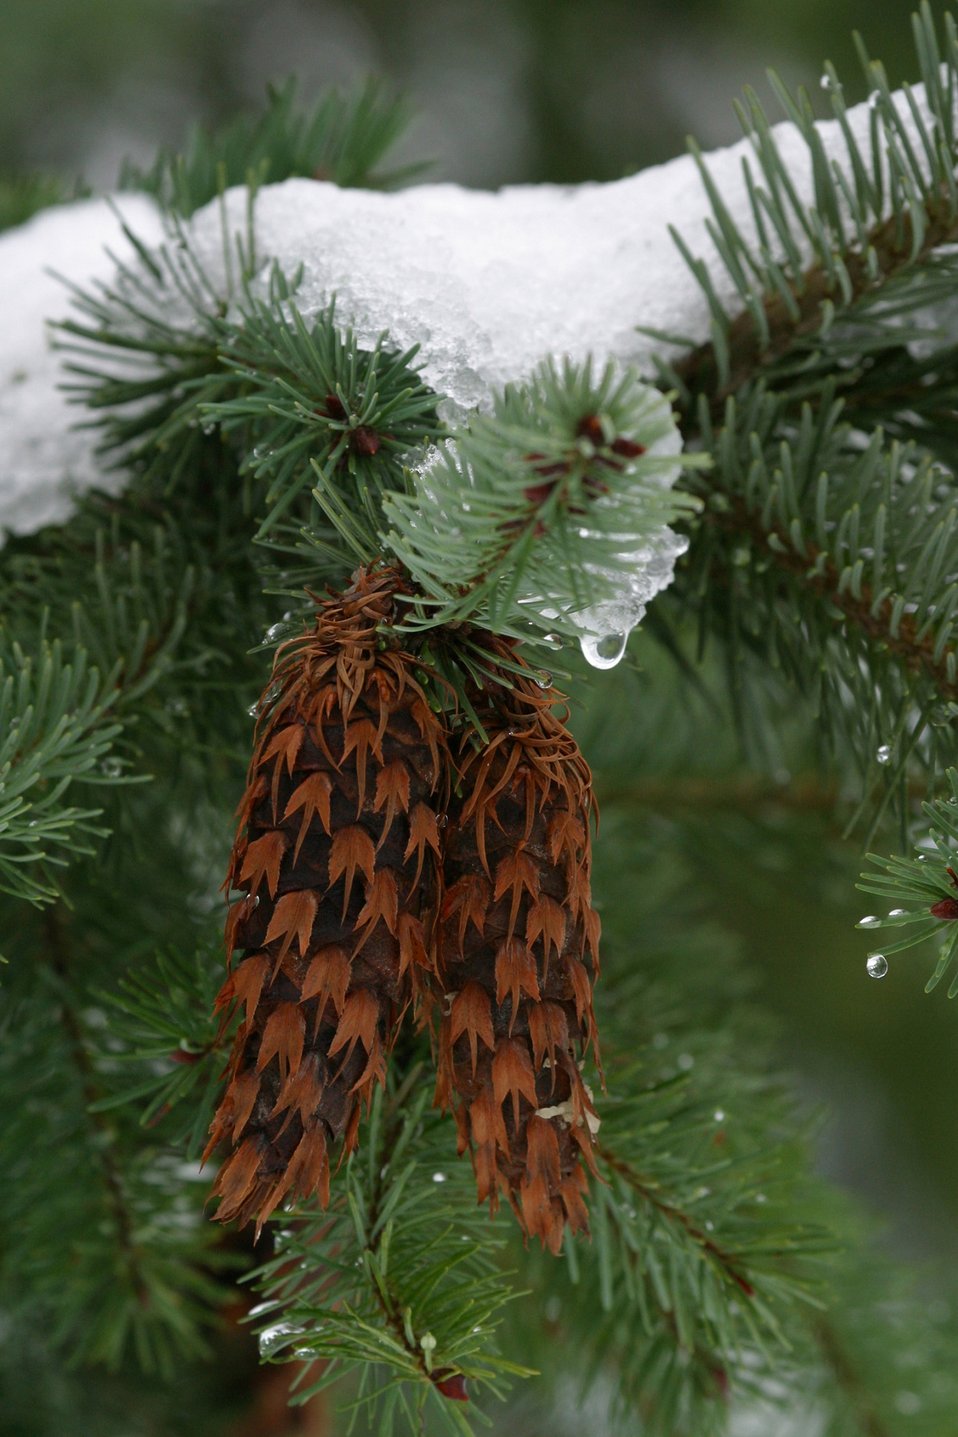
Snow and ice on Douglas Fir Bows and cones during the storm of January 2004.